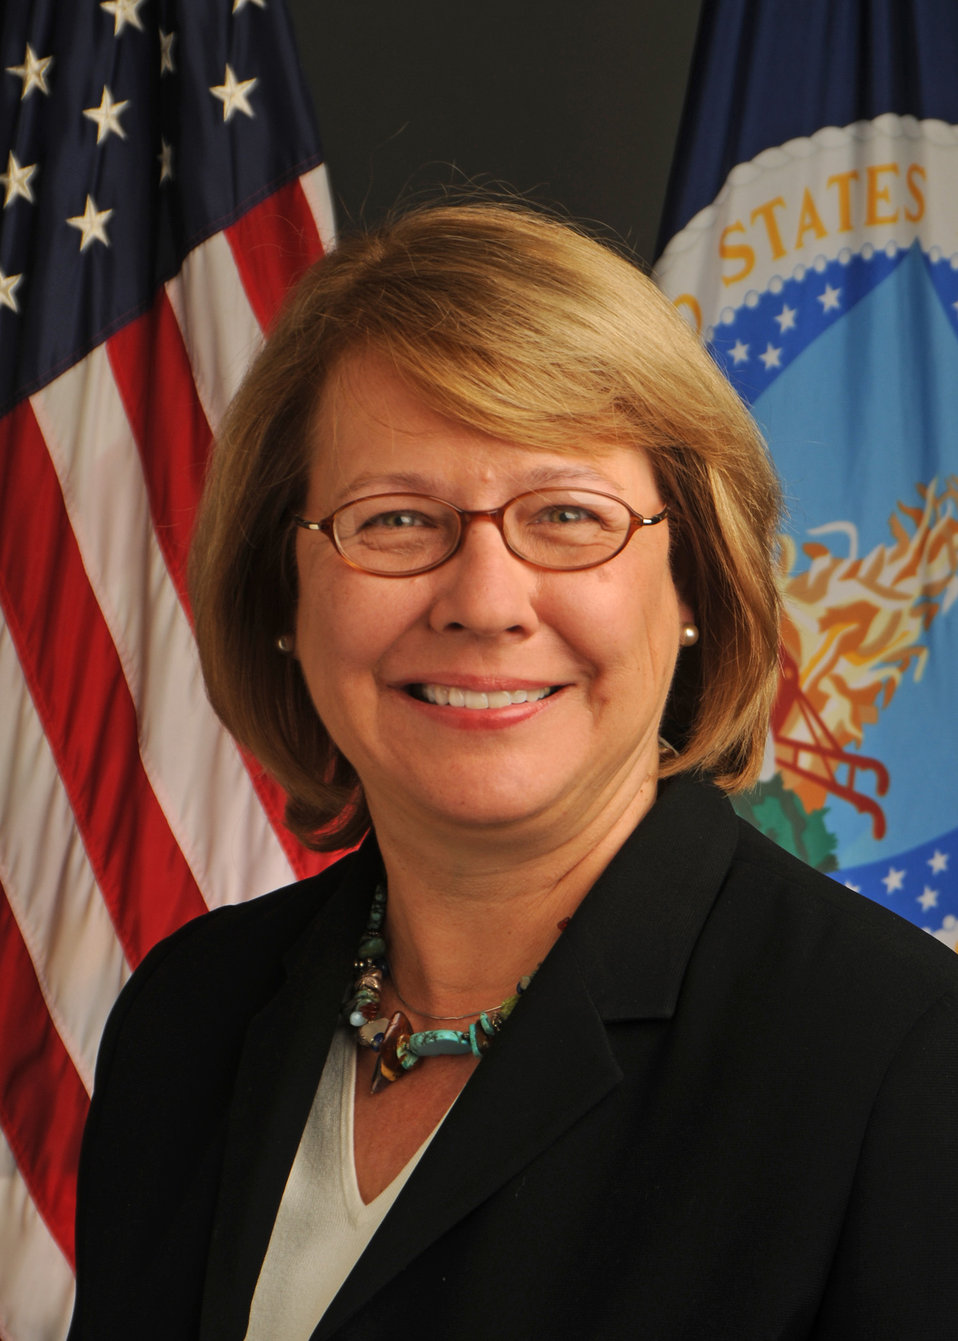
10di1107-0016 Deputy Under Secretary Research, Education and Economics Ann M. Bartuska

Portrait, Deputy Under Secretary Research, Education and Economics, Ann M. Bartuska.